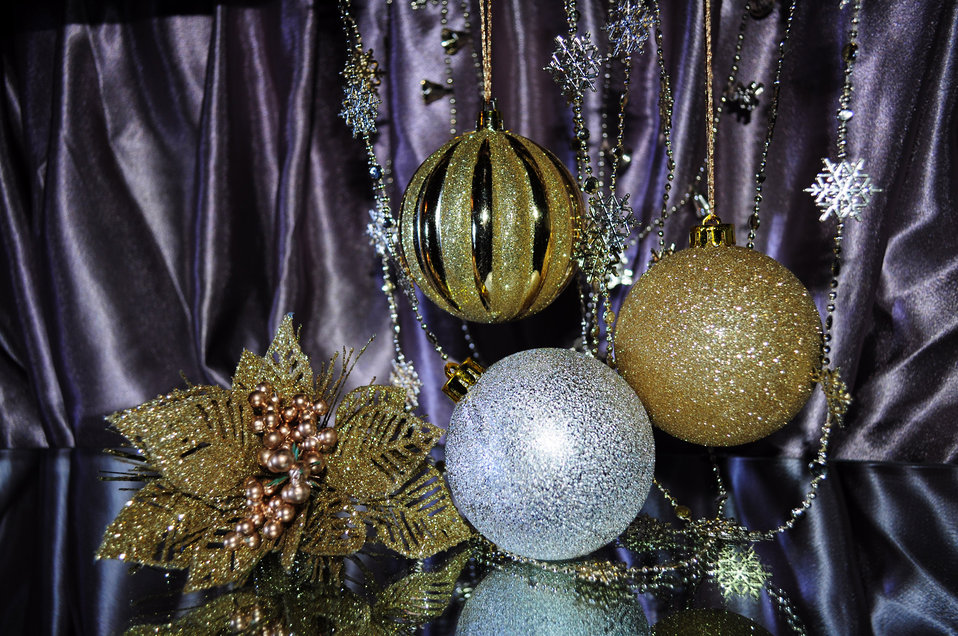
Christmas decorations

Golden balls, garlands for christmas card.